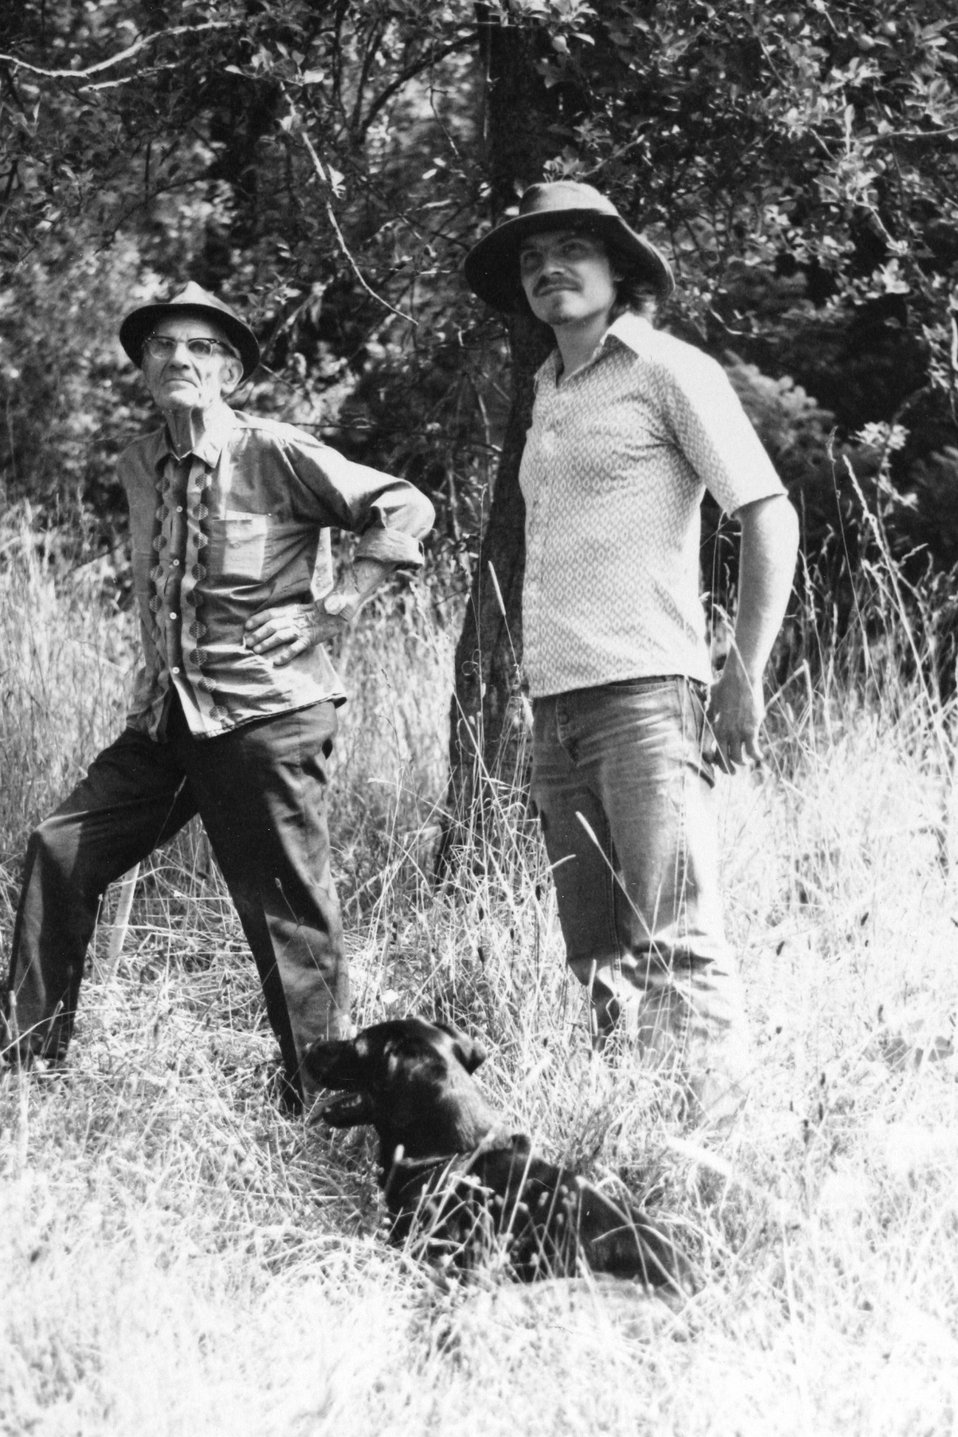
Ivin Billings and grandnephew Tom Billings at the Big Meadow. C. 1977